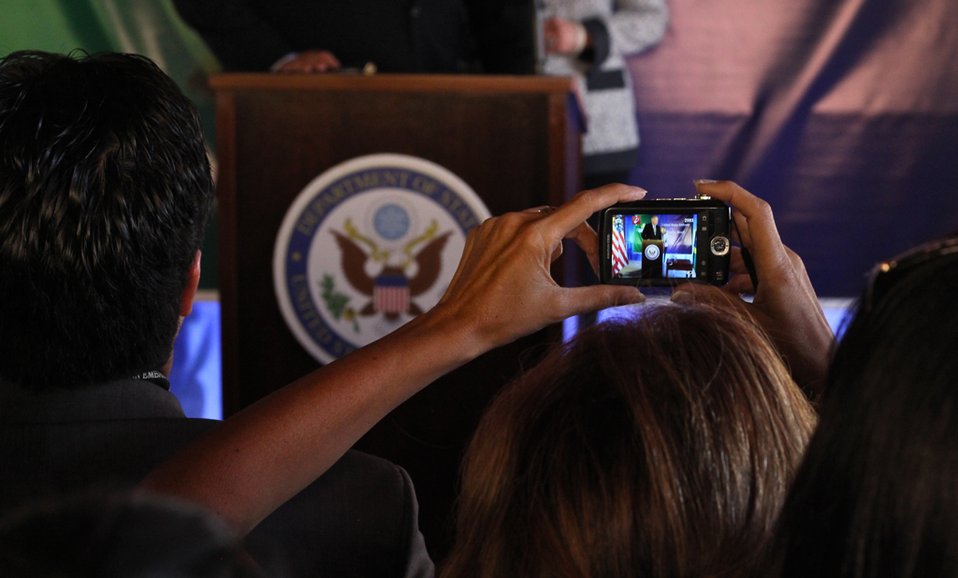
Embassy Brasilia Staff Member Takes a Photo of Secretary Clinton

A staff member captures photos of U.S. Secretary of State Hillary Rodham Clinton as she addresses the staff and families of the U.S. Embassy in Brasilia, Brazil, on April 16, 2012.